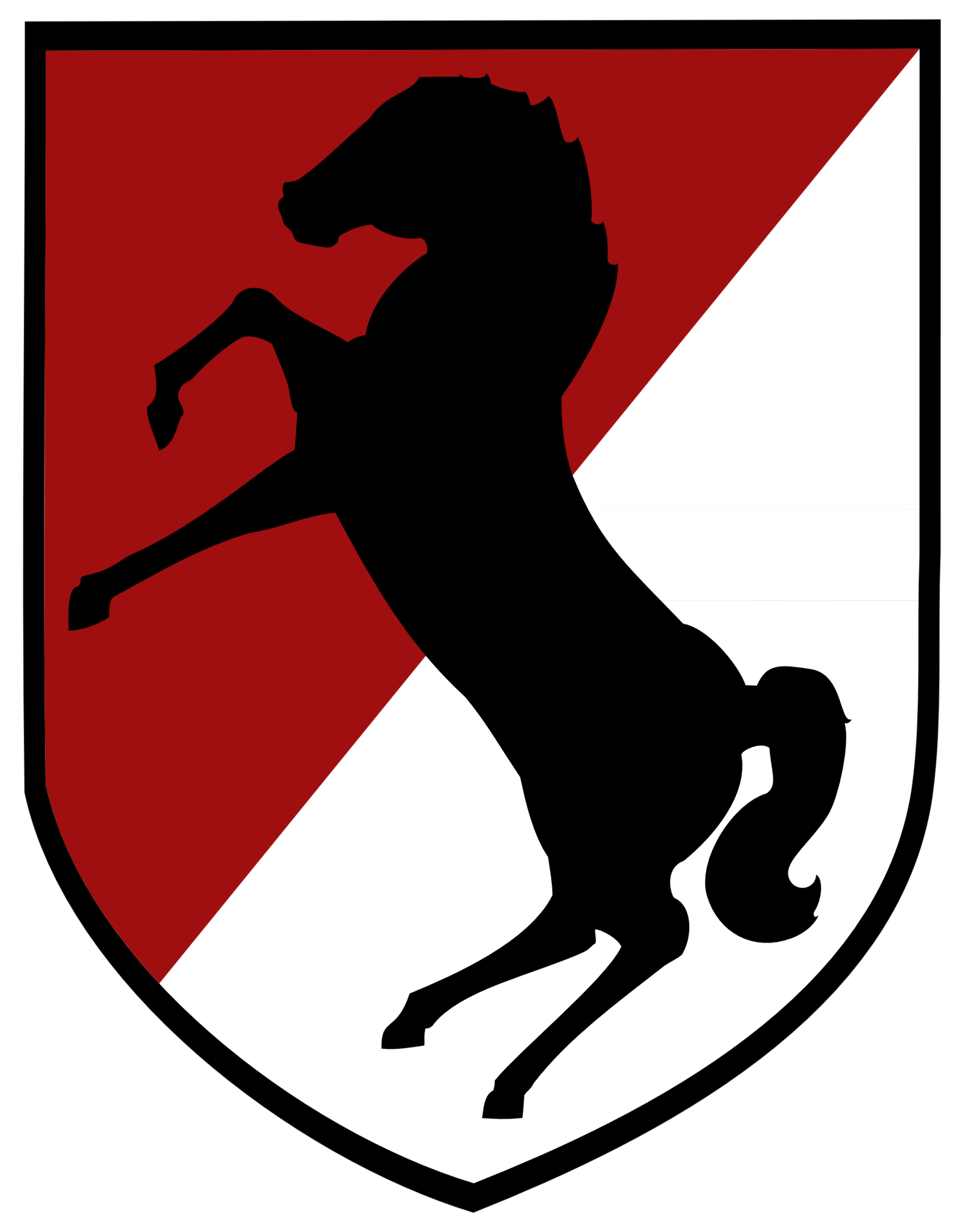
The 11th Armored Cavalry Regiment Shoulder Patch